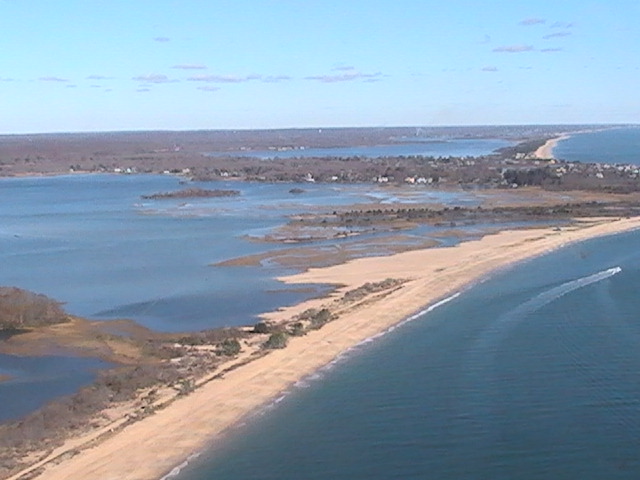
Barrier beach Overwash (RI)

Barrier beach overwash on the Quononchontaug Barrier Beach Rhode Island.